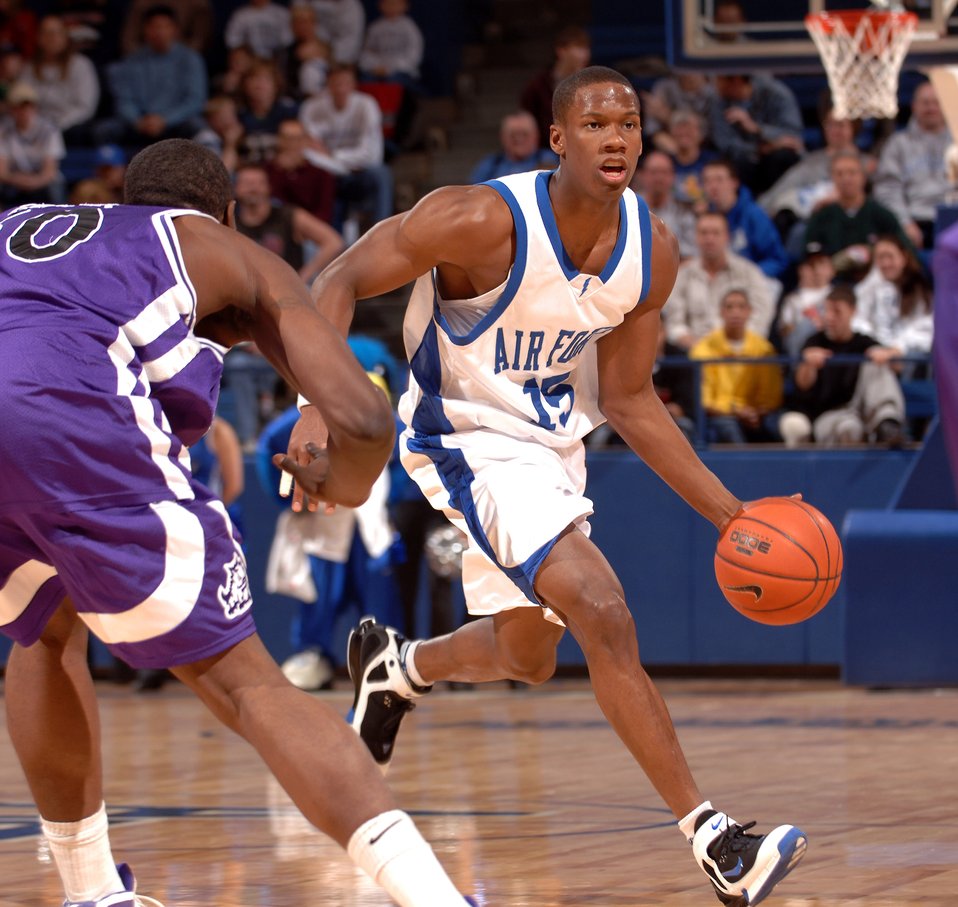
Falcons to play NCAA

Senior Antoine Hood looks down court during play against Texas Christian University on Jan. 14. The senior and his U.S. Air Force Academy men’s basketball teammates will be facing off against Illinois in the NCAA Tournament Thursday, Mar. 16, 2006, at Cox Arena in San Diego, Calif.